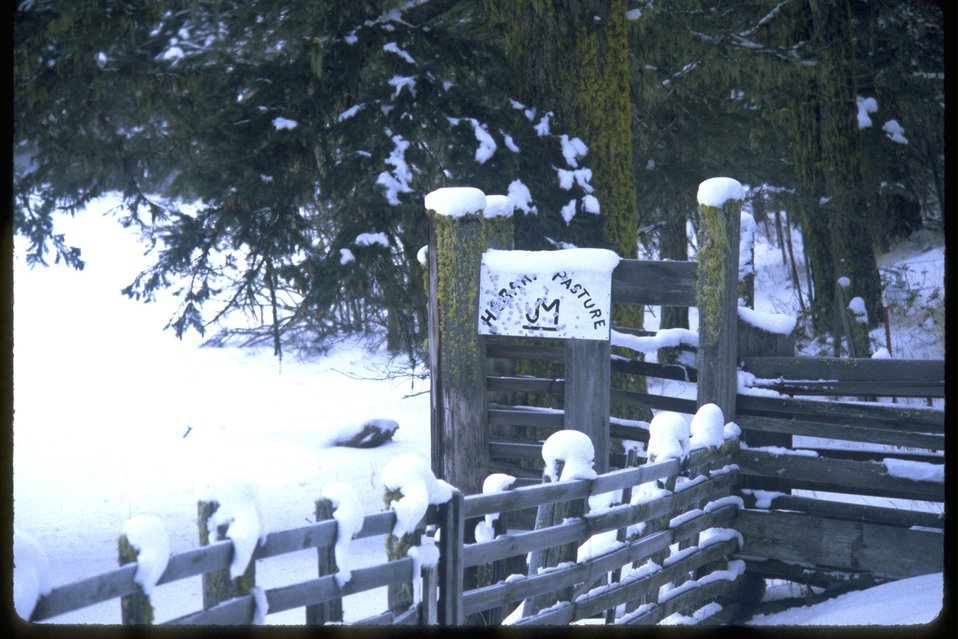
Hobart Pasture on Soda Mountain Road.